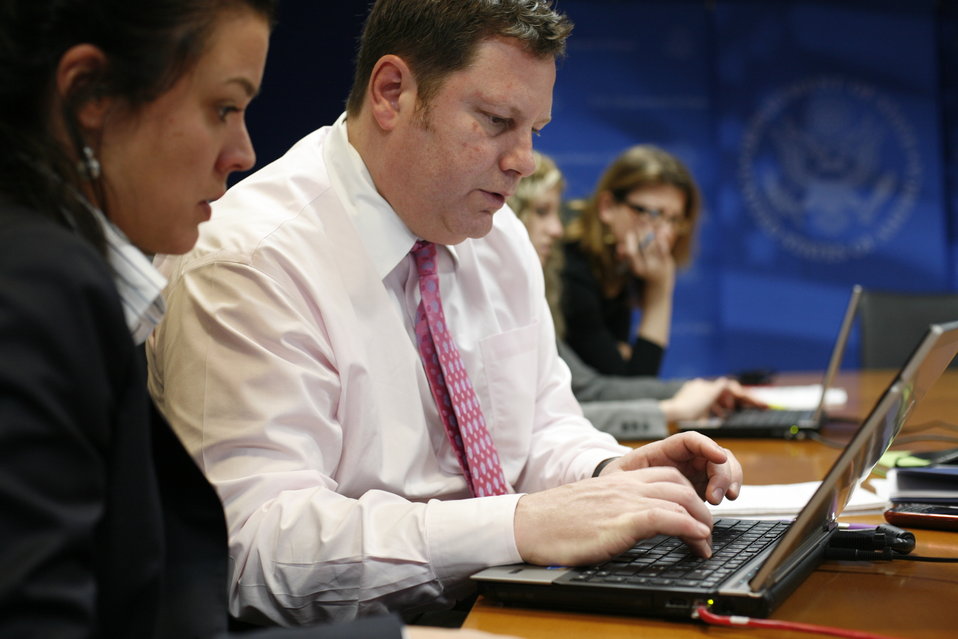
Acting Assistant Secretary Hammer Responds to #AskMike Questions

Acting Assistant Secretary of State for Public Affairs Mike Hammer responds to #AskMike questions from the Department’s official Spanish Twitter feed, @USAenEspanol, on January 24, 2012. Director of International Media Engagement Abigail Dressel looks on.